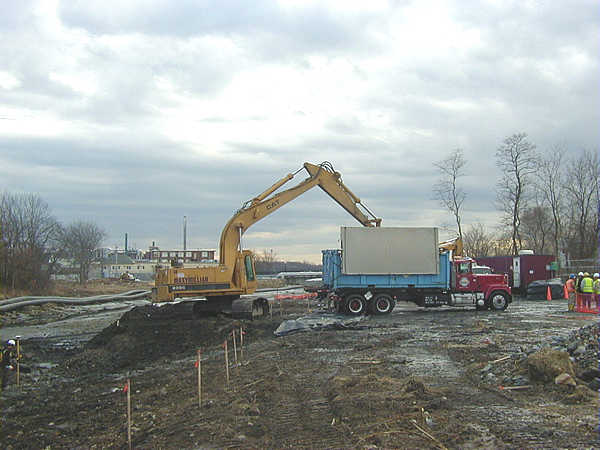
Winter 2003, Loading contaminated sediment for removal

PCBs are persistent chemicals in the environment, because of their stable chemical structure, they do not break down easily on their own.

For proper disposal, they need to be destroyed or contained in a manner that prevents them from re-entering the environment and the food chain.